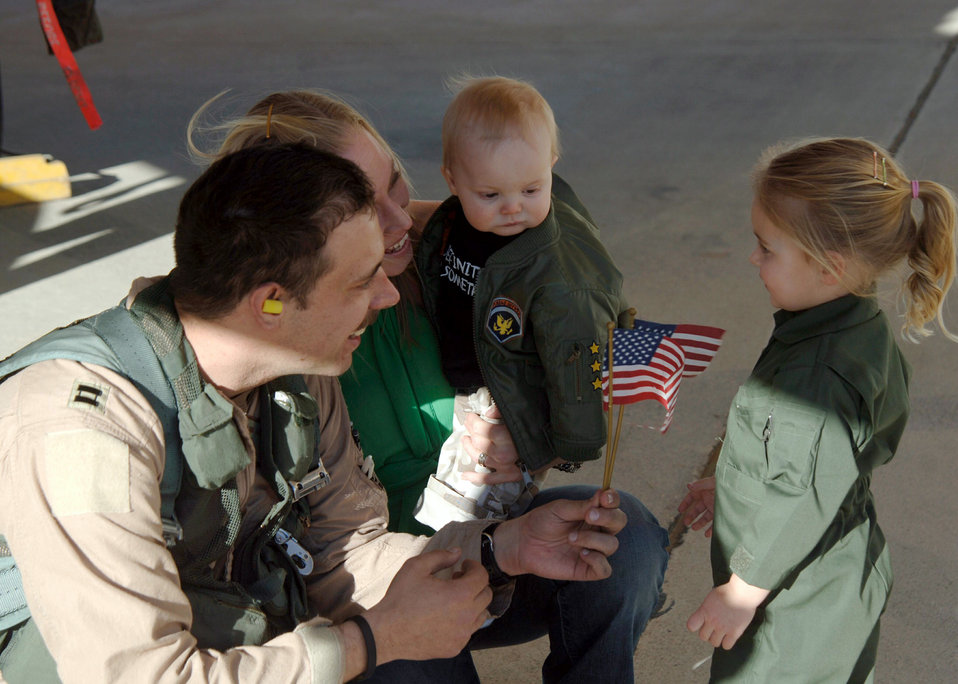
Welcome home

DAVIS-MONTHAN AIR FORCE BASE, Ariz. (AFPN) -- Capt. Jay Annis reunites with his family upon his return home Feb. 10. Captain Annis, an A-10 Thunderbolt II pilot with the 354th Fighter Squadron, was deployed to Bagram Air Base, Afghanistan, in support of Operation Enduring Freedom.